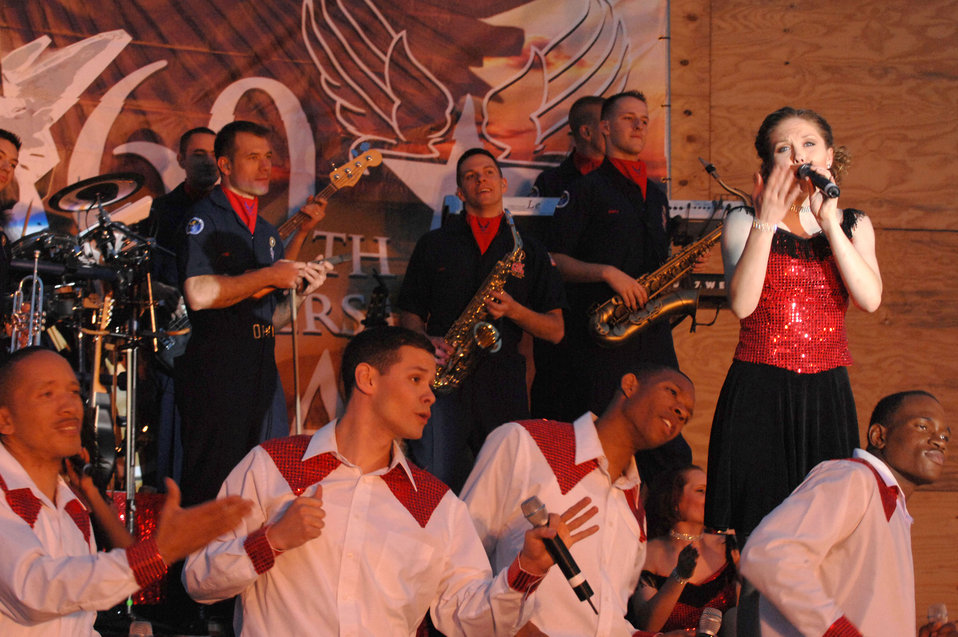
Tops in Blue perform for Airmen in Iraq

Tops in Blue members perform for Airmen and Soldiers April 26 at Kirkuk Air Base, Iraq. Tops in Blue's goal is to enhance mission productivity for Air Force members around the world. Tops In Blue Airmen perform an average of 120 performances at 100 locations worldwide each year.